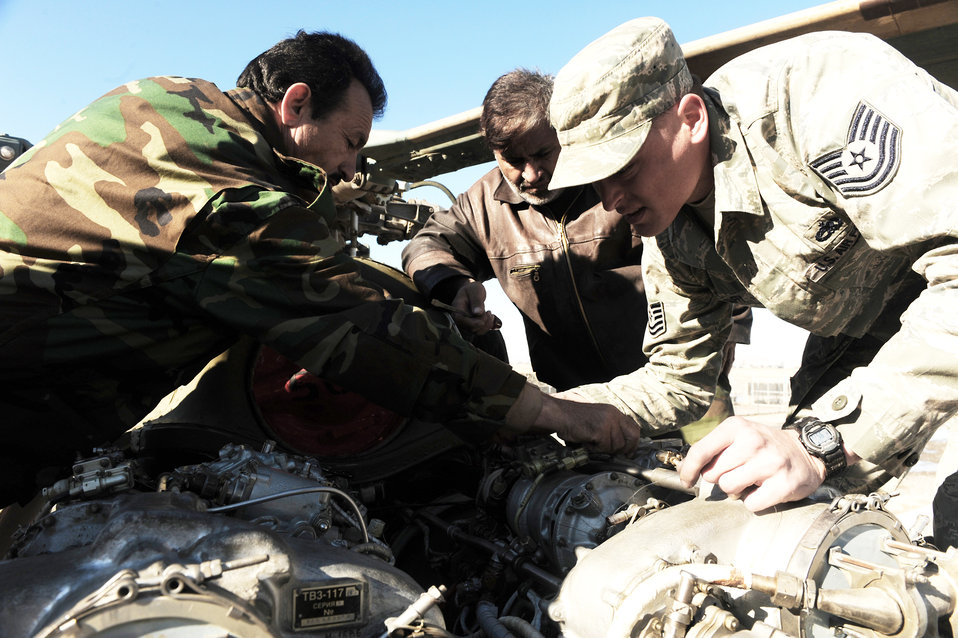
Airmen teach Afghans the art of maintaining

Afghanistan National Army Air Corps soldiers and Tech. Sgt. Kevin Duffy perform routine maintenance on an MI-17 helicopter Jan. 5, 2010 at Kandahar Airfield, Afghanistan. Sergeant Duffy is deployed from Joint Base McGuire-Dix-Lakehurst, N.J. Sergeant Duffy is a 738th Air Expeditionary Maintenance adviser.